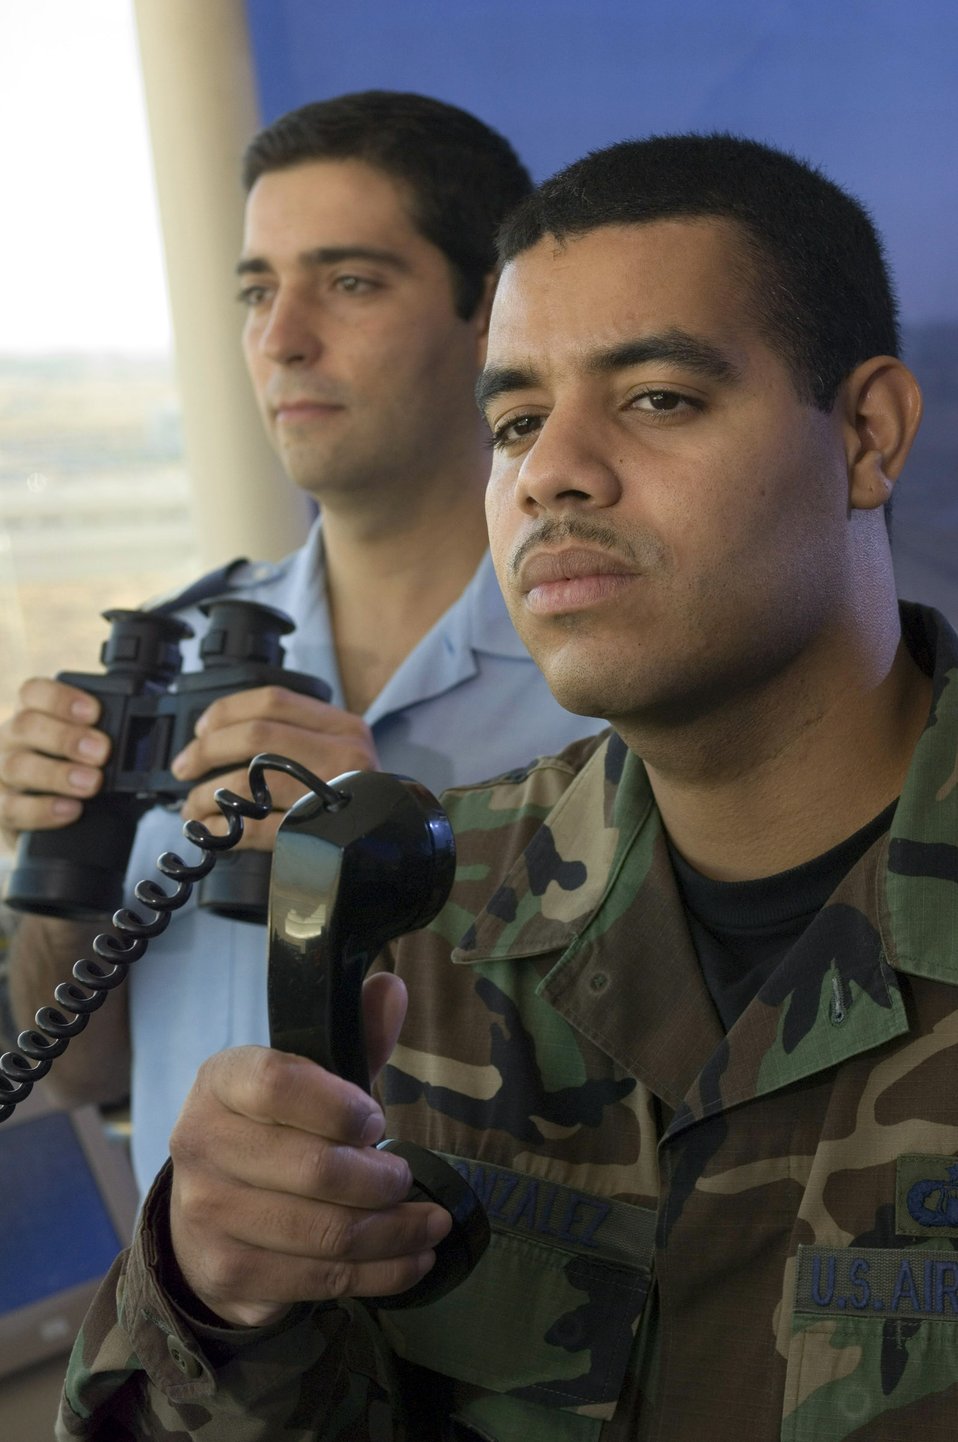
Controlling the Spanish sky

MORON AIR BASE, Spain -- Staff Sgt. Manuel Gonzalez (right) works with Spanish Air Force Staff Sgt. Fernando Gordillo here in one of two air traffic towers in the Air Force where speaking Spanish is a requirement. Sergeant Gonzalez is an air traffic control watch supervisor with the 496th Air Base Squadron.